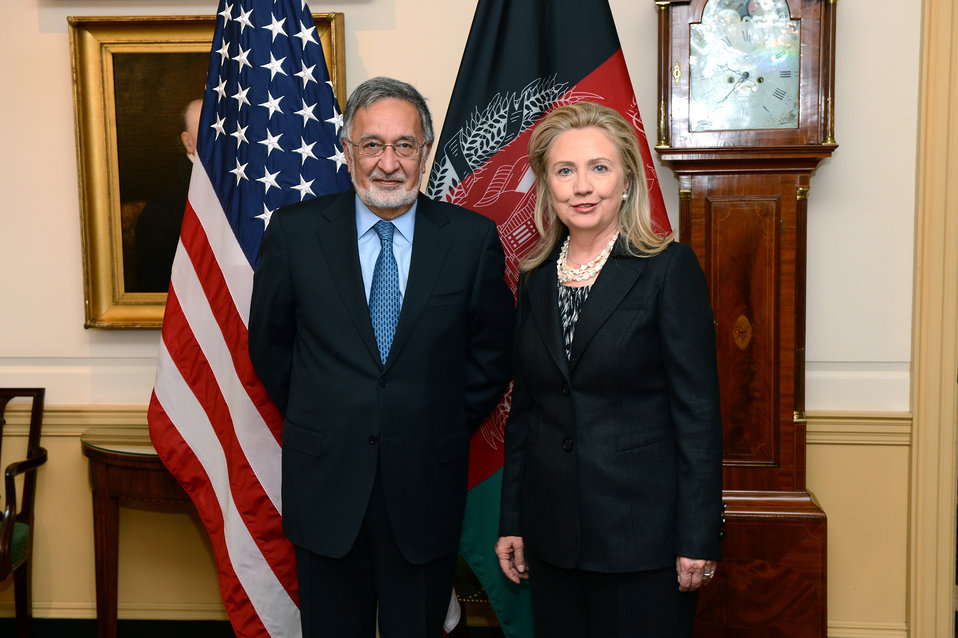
Secretary Clinton With Afghan Foreign Minister Rassoul

U.S. Secretary of State Hillary Rodham Clinton meets with Afghan Foreign Minister Zalmai Rassoul at the U.S. Department of State in Washington, D.C., October 3, 2012.